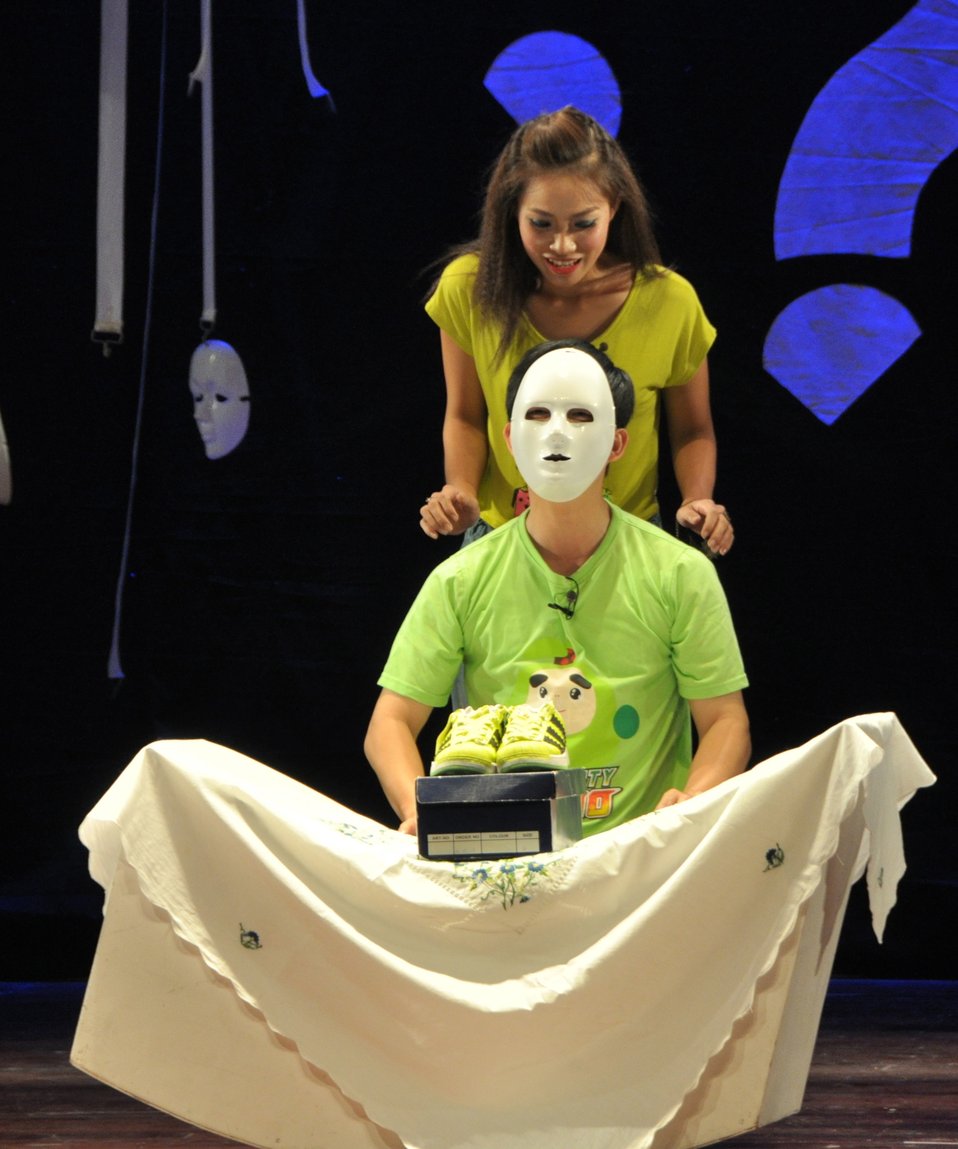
PEPFAR Musical Questions and Exclamations

Hanoi, May 17, 2013